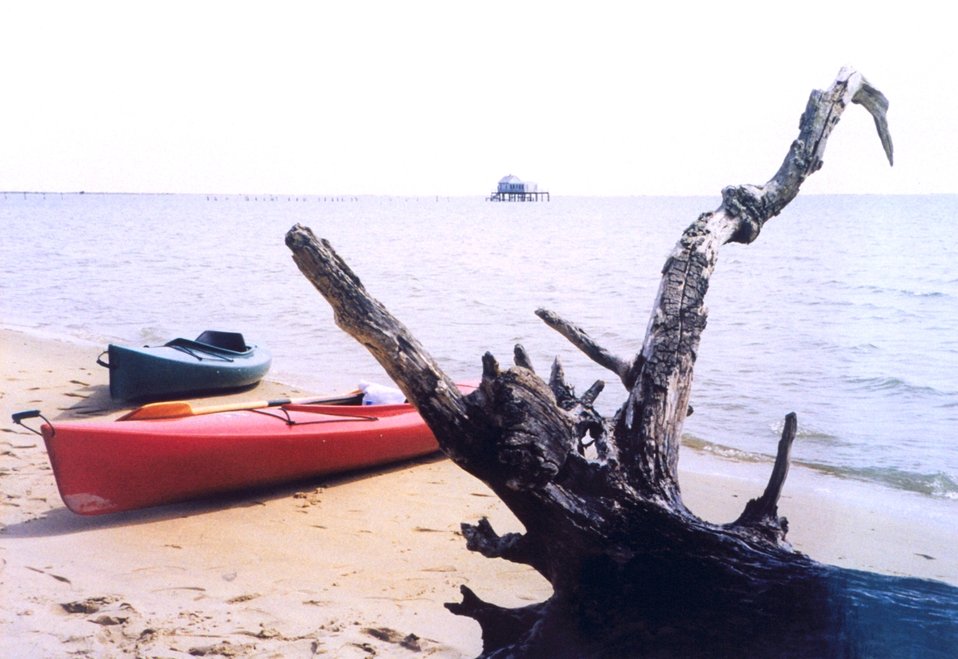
Kayaks on the beach at Chincoteague with a wonderful piece of driftwood.